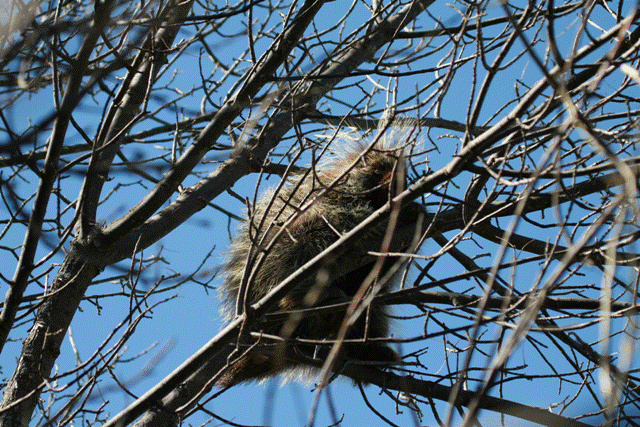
Porcupine (Erethizon dorsatum)

Porcupines are usually dark brown or black in color, with white highlights. They have a chunky body, a small face, short legs and a short thick tail. They are herbivores.

Their upper parts are covered with thousands of sharp, barbed hollow spines or quills (actually modified hairs), which are used for defense. Porcupines do not throw their quills, but the quills detach easily and the barbs make them difficult to remove once lodged in an attacker.